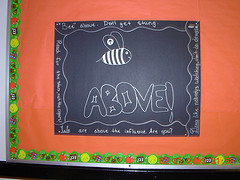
Iowa's SAFE Coalition, NDFW 2013

Van Buren County, IA. SAFE Coalition high school student run groups fighting issues of drug, alcohol, and tobacco abuse during NDFW 2013.